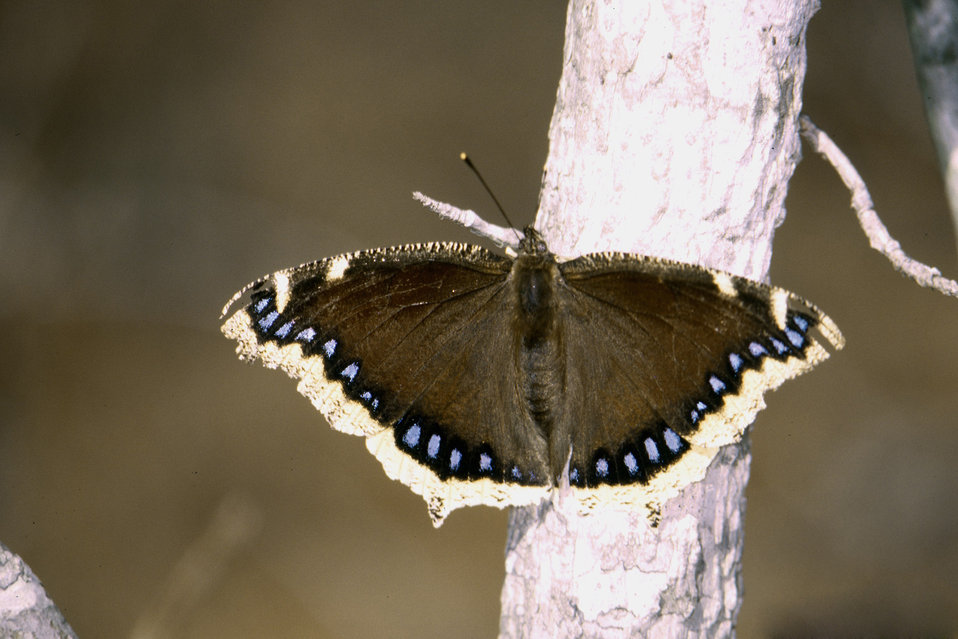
A mourning cloak butterfly collects nectar from a flower. Butterflies are one of nature’s many pollinators for flowers and crops and are crucial in production for fruits and vegetables.